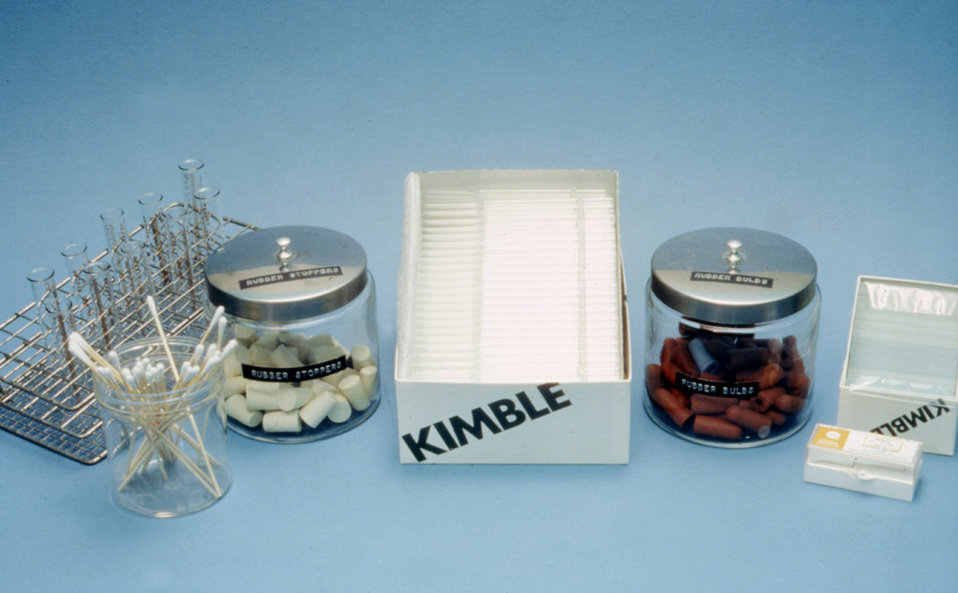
This photograph reveals some of the materials used in parasitologic studies.